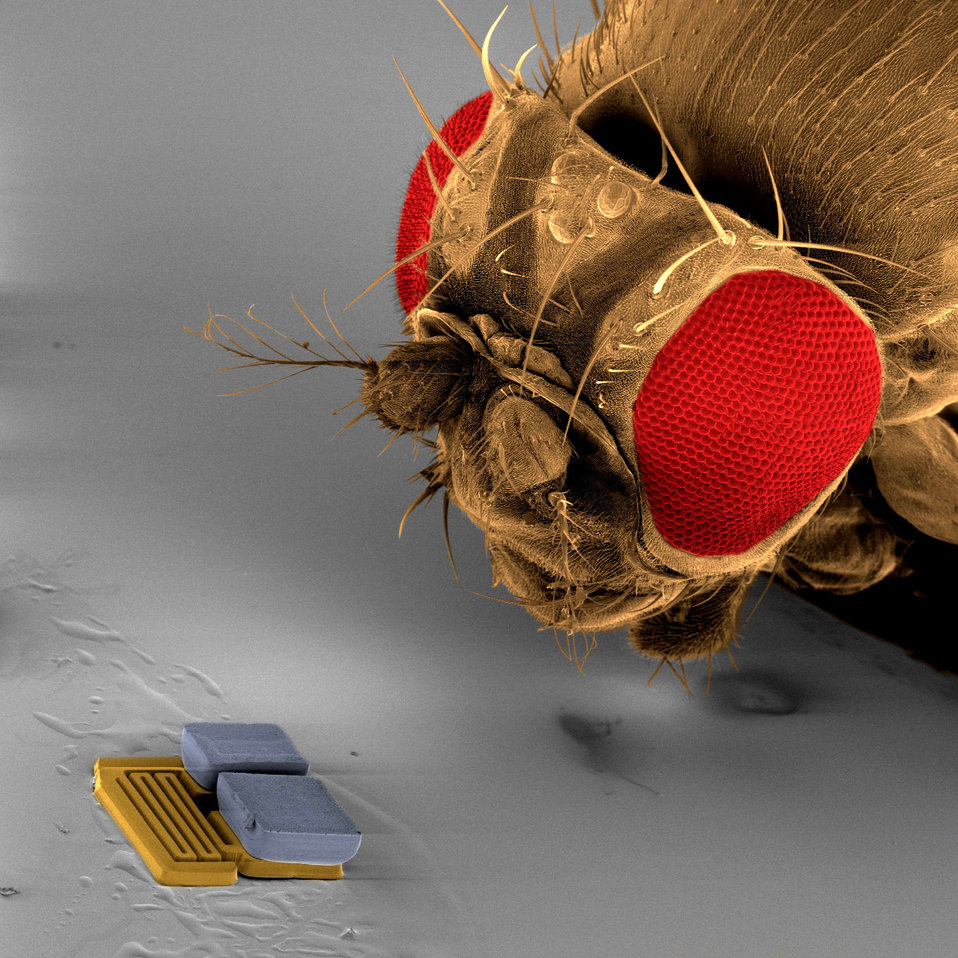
Microrobot